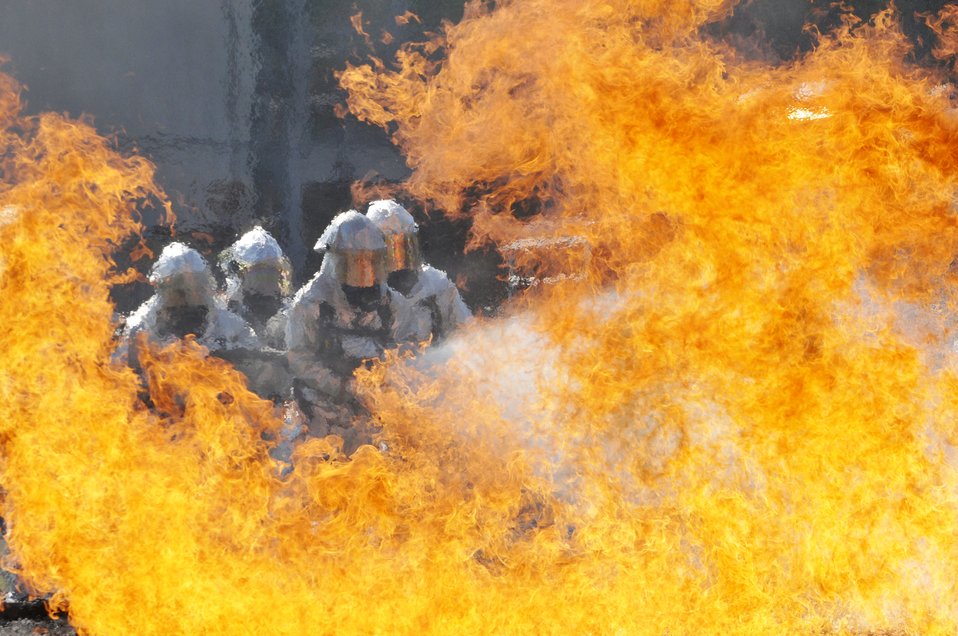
Crews train to fight fire

Firefighters from the 125th Fighter Wing at Jacksonville, Fla., and 71st Fighter Wing at Langley Air Force Base, Va, fight the fire in a burn pit at the Combat Readiness Training Center in Savannah, Ga., March 13, 2010. The burn pit re-creates most scenarios of a real aircraft fire.